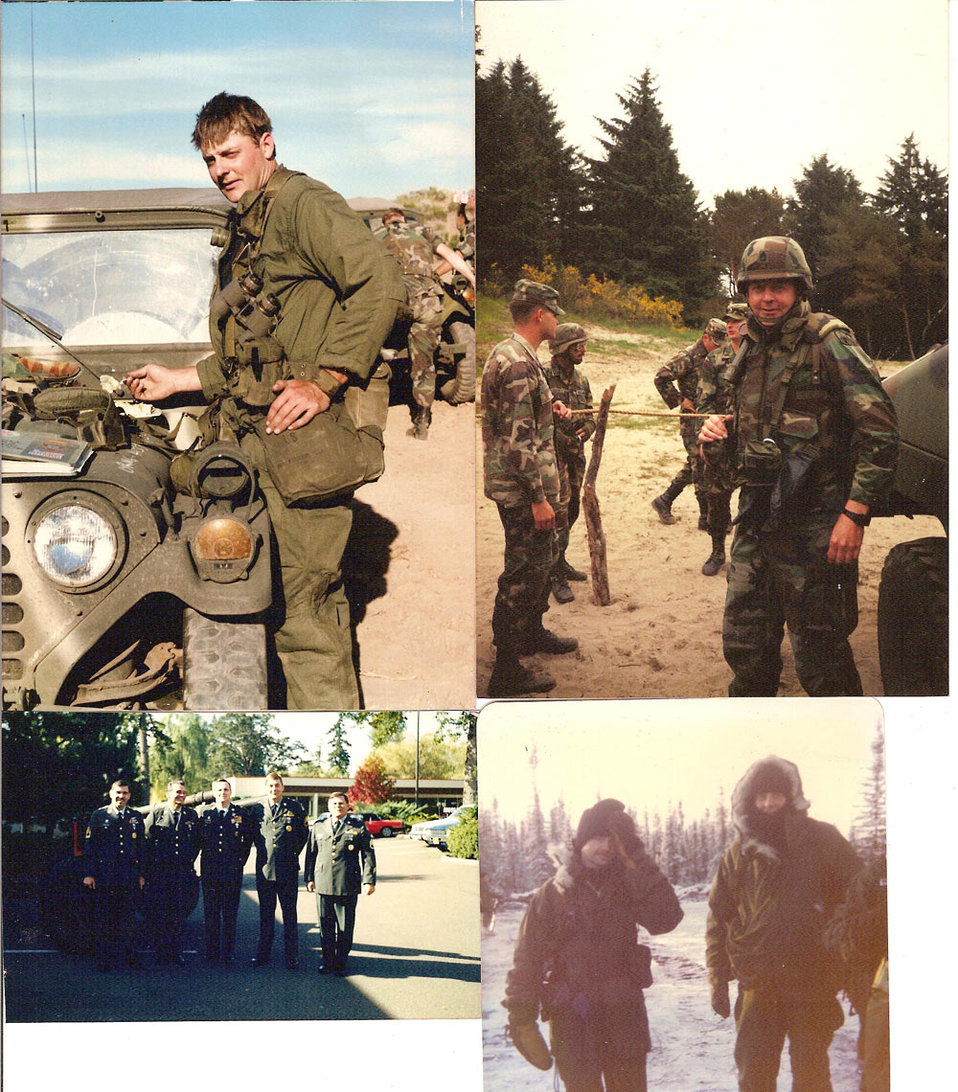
Murray Nunn-Pacific Region

Murray Nunn, in the Office of Refuge Law Enforcement in Portland, Oregon, enlisted 1970 and was discharged in 2003. He served a total of 29 ½ years active Army, Army reserve and Army National Guard.